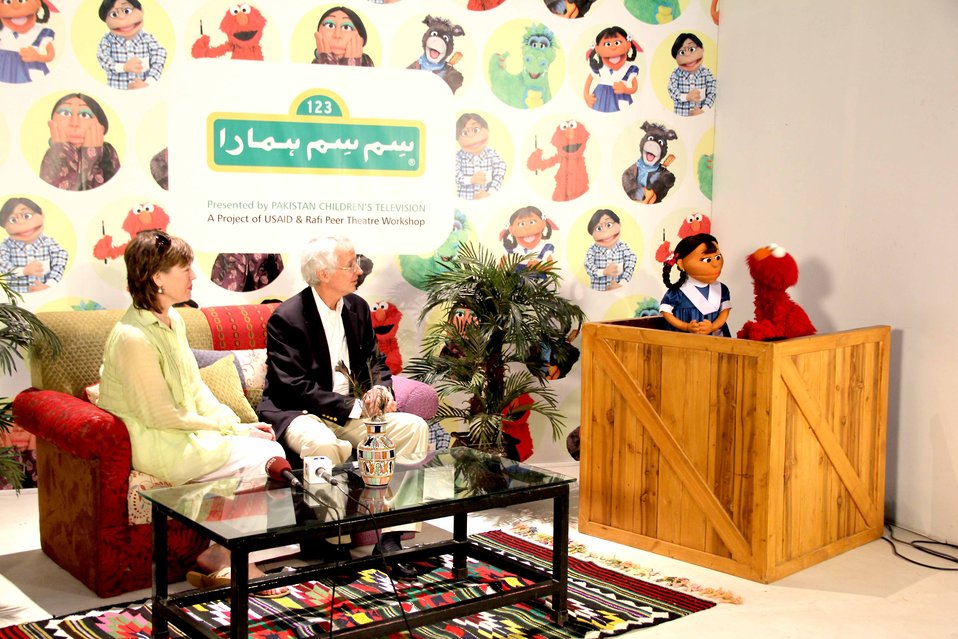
U.S. Ambassador’s Visit to Sim Sim Hamara Highlights U.S. Commitment to Improved Children’s Education in Pakistan at Lahore on 28 April, 2012

US Ambassador Cameron Munter & his wife Dr. Marliyn Wyatt recored his message.